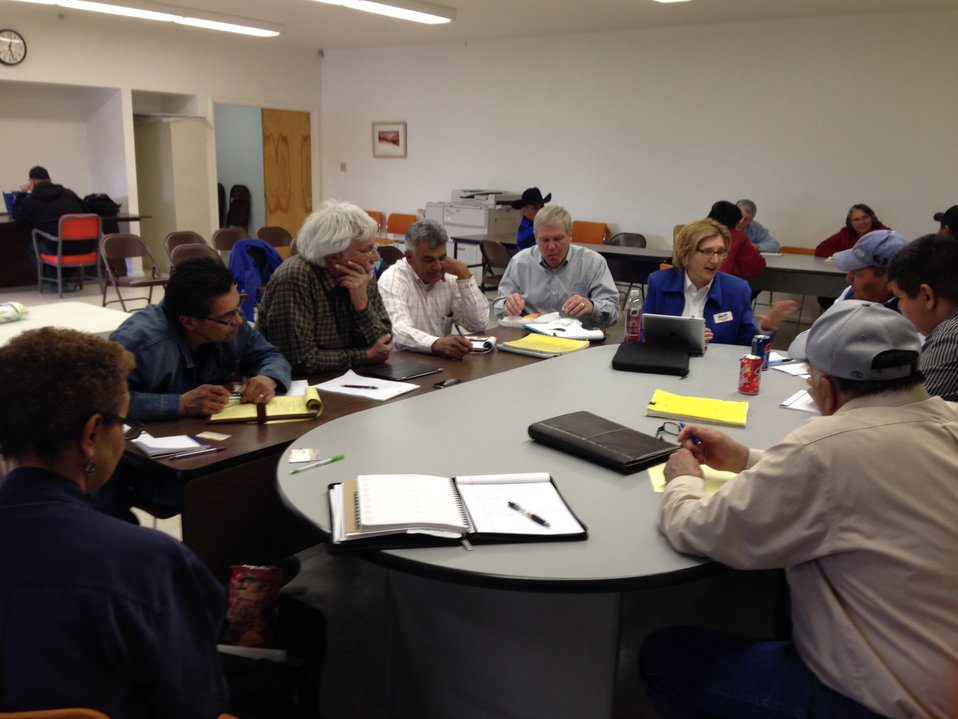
Around the table

U.S. Department of Agriculture (USDA) agencies met with groups in Nevada to discuss the 2014 Farm Bill and the StrikeForce for Rural Growth and Opportunity initiative.